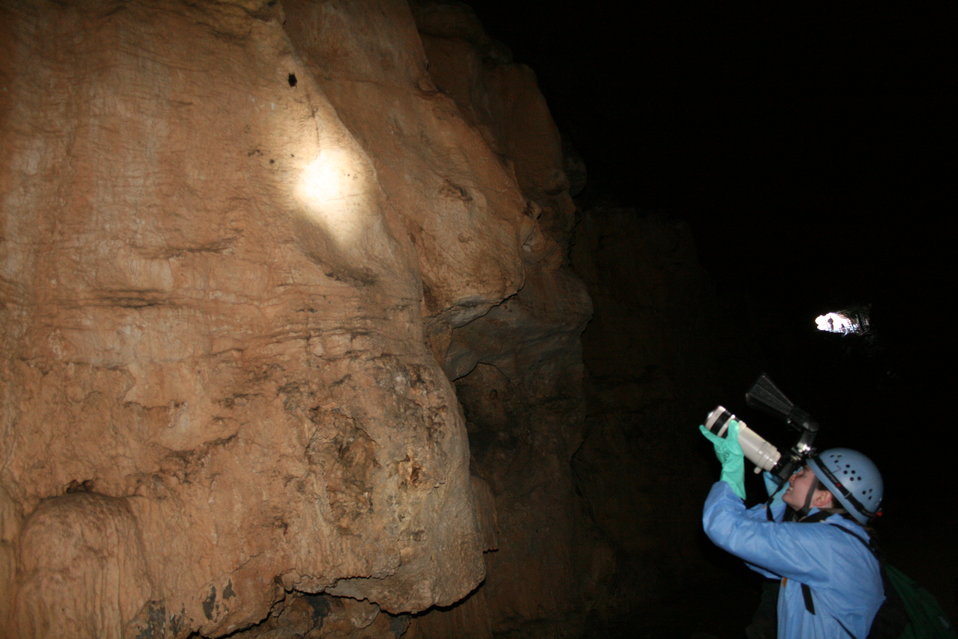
MDC biologist Shelly Colatskie photographs bat